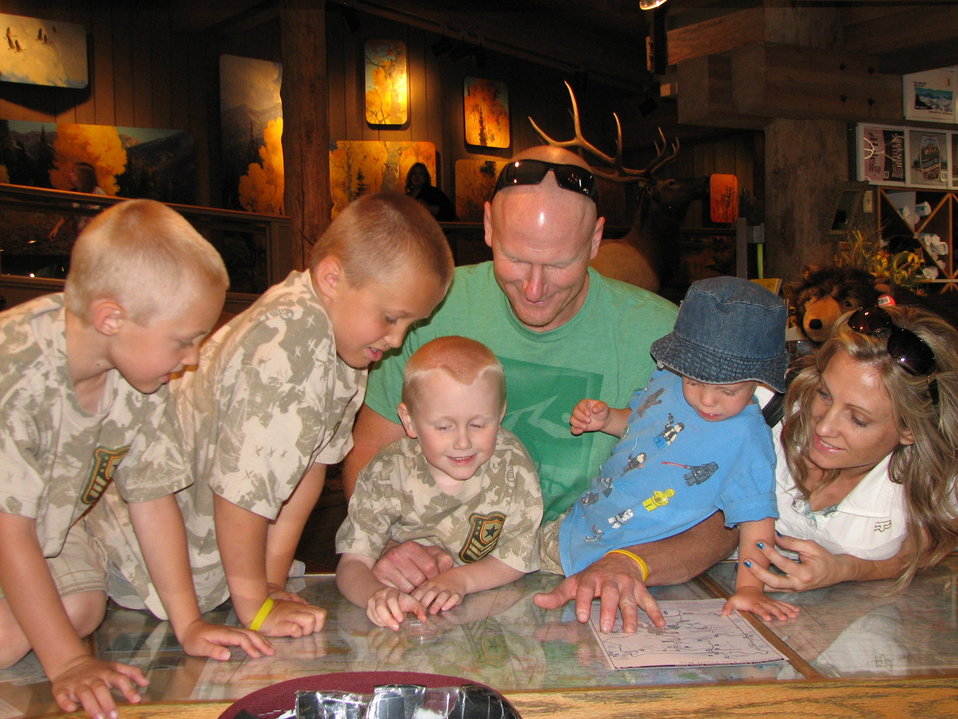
Getting Their Bearings

A family studies a map at the Jackson Hole & Greater Yellowstone Visitor Center information desk. The interagency center is staffed by employees from the National Elk Refuge, Jackson Hole Chamber of Commerce, Bridger-Teton National Forest, and Grand Teton National Park (seasonally) who provide travel information to over 300,000 visitors per year. The visitor center also offers a diverse selection of items for sale in a bookstore operated by the Grand Teton Association.